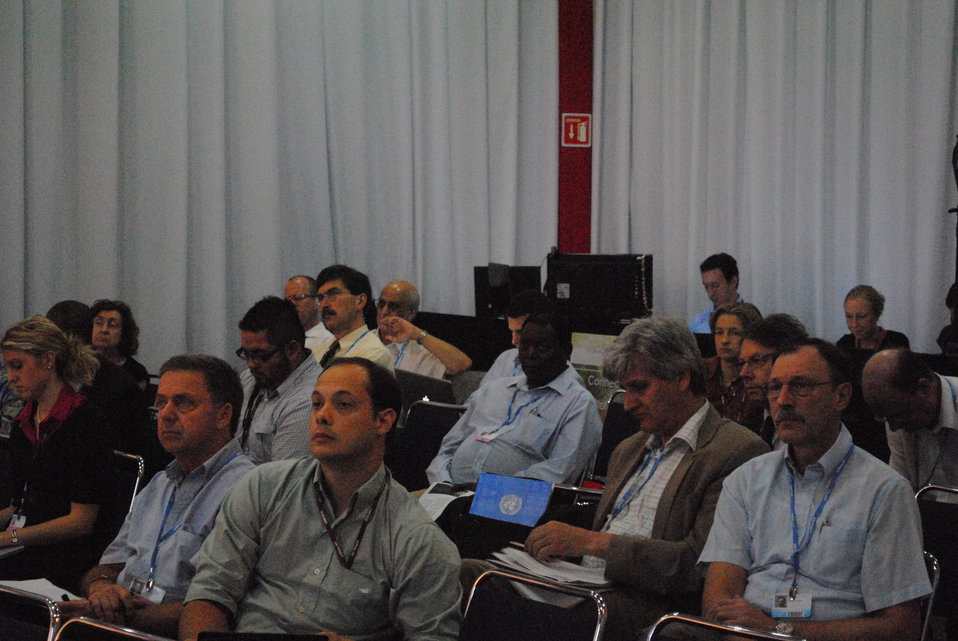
Audience Viewers Learn About the Impact of Fires

Viewers of the audience learn about the ïmpact of fires at a side event at the U.S. Center at COP-16 in Cancun, Mexico, on December 2, 2010.